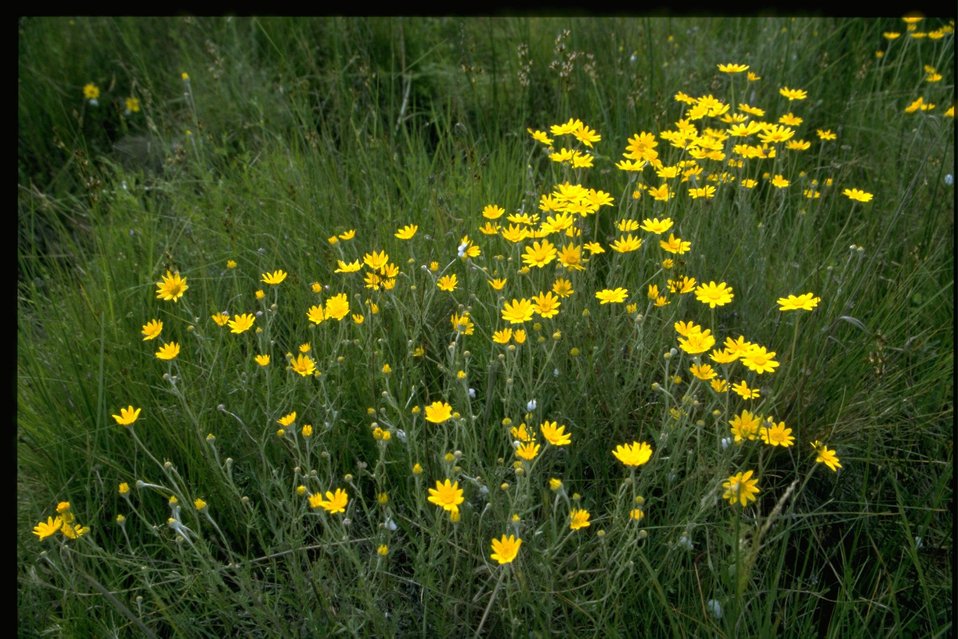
Medium shot of Eriophyllum lanatum.